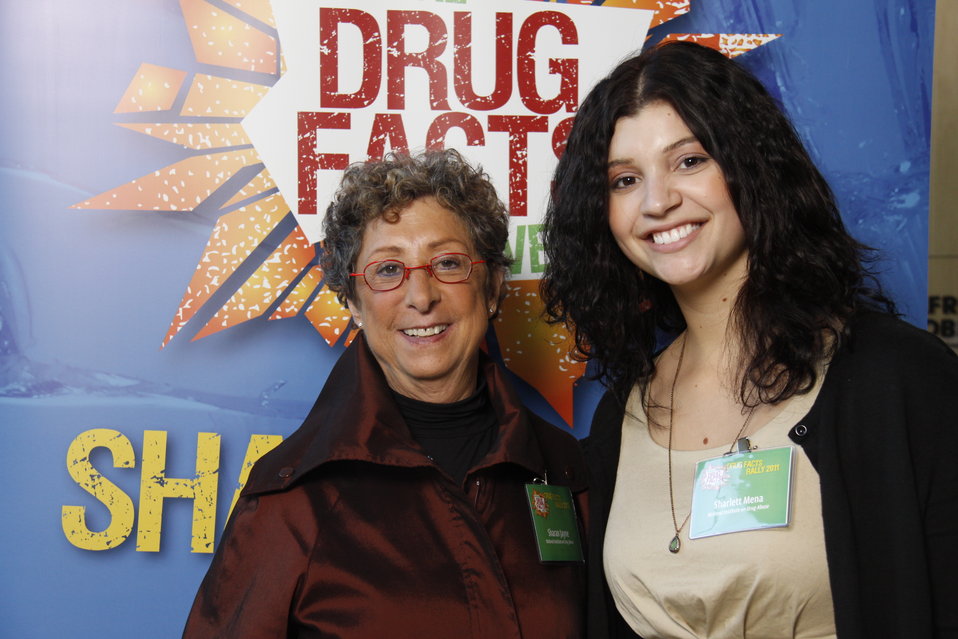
NDFW Mentor Event